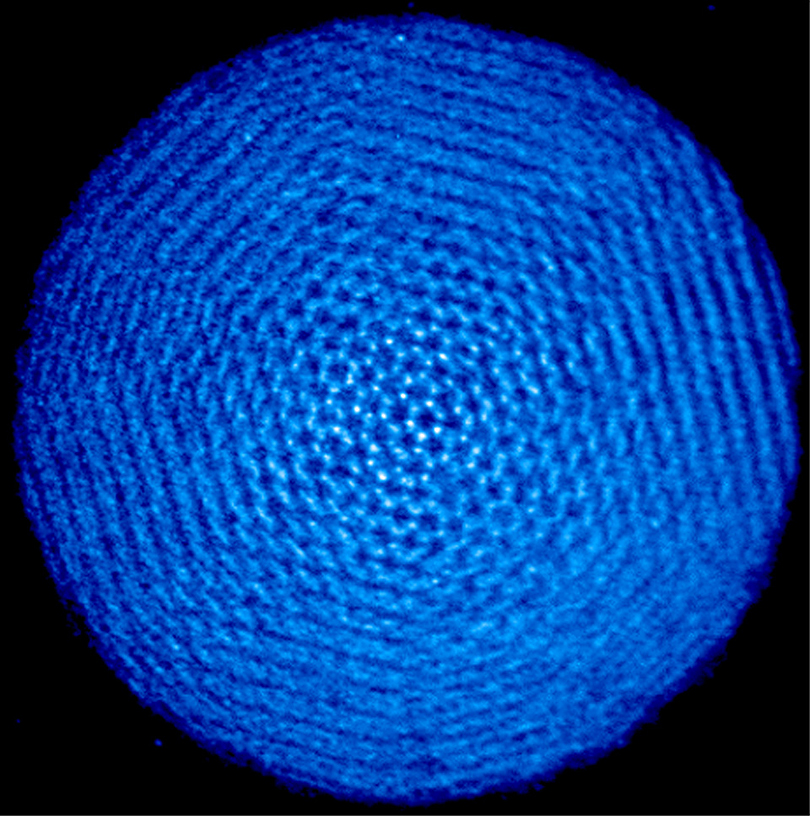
Beryllium ions

A crystal of beryllium ions formed from a laser-cooled plasma.